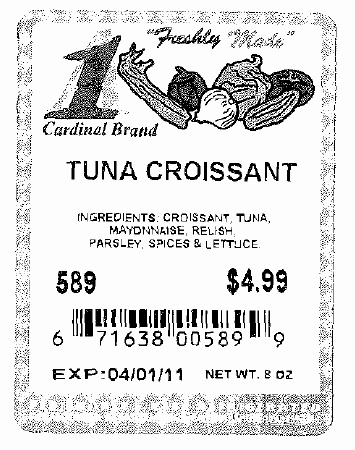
RECALLED - Sandwiches

April 12, 2011 - Product Recall - A-1 Sandwich Company Voluntarily Recalls Sandwiches with Undeclared Allergens.